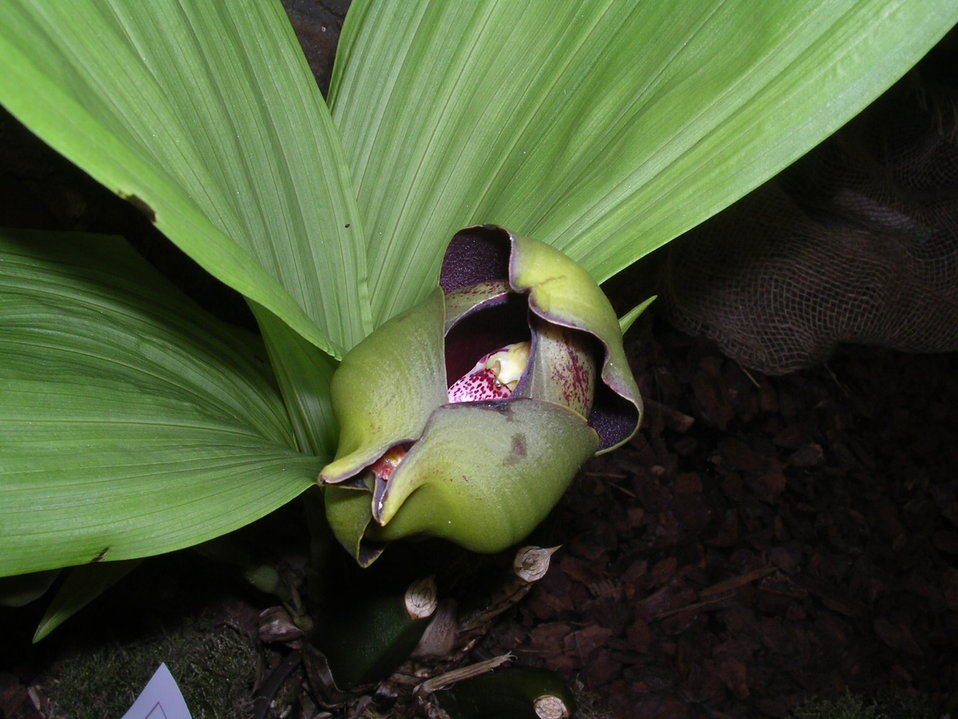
Anguloa sp. - Orchideenwelt at Dresden Messe - 01.04.2006 - by Diogo Correia